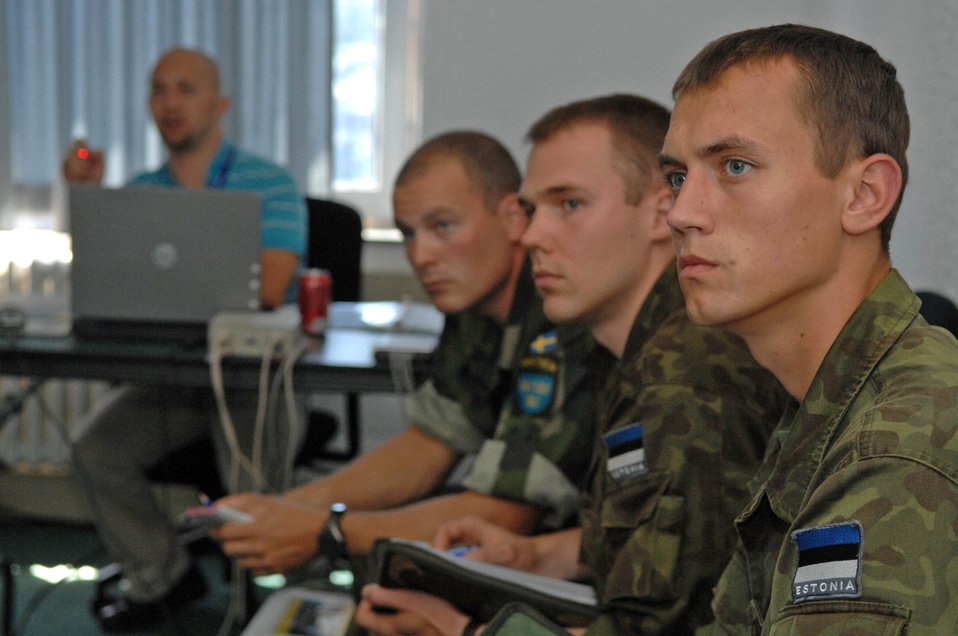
Air ground operations school helps NATO train Estonian, Swedish troops for deployment

Estonian air force members Junior Sergeant David Mellov, 2nd Lt. Evo Koiv and Swedish army ranger Capt. Timothy Walsh watch a demonstration of a computer simulator at the U.S. Air Forces in Europe Air Ground Operations School used for practicing air strikes during close-air-support operations. The forward air controllers spent a week in pre-deployment briefings, computer simulation, and field training prior to deployment thanks to the joint efforts of the staff at the USAFE AGOS and the International Security Assistance Force Cell at NATO Allied Air Component Command Headquarters Ramstein Aug. 17- 21.